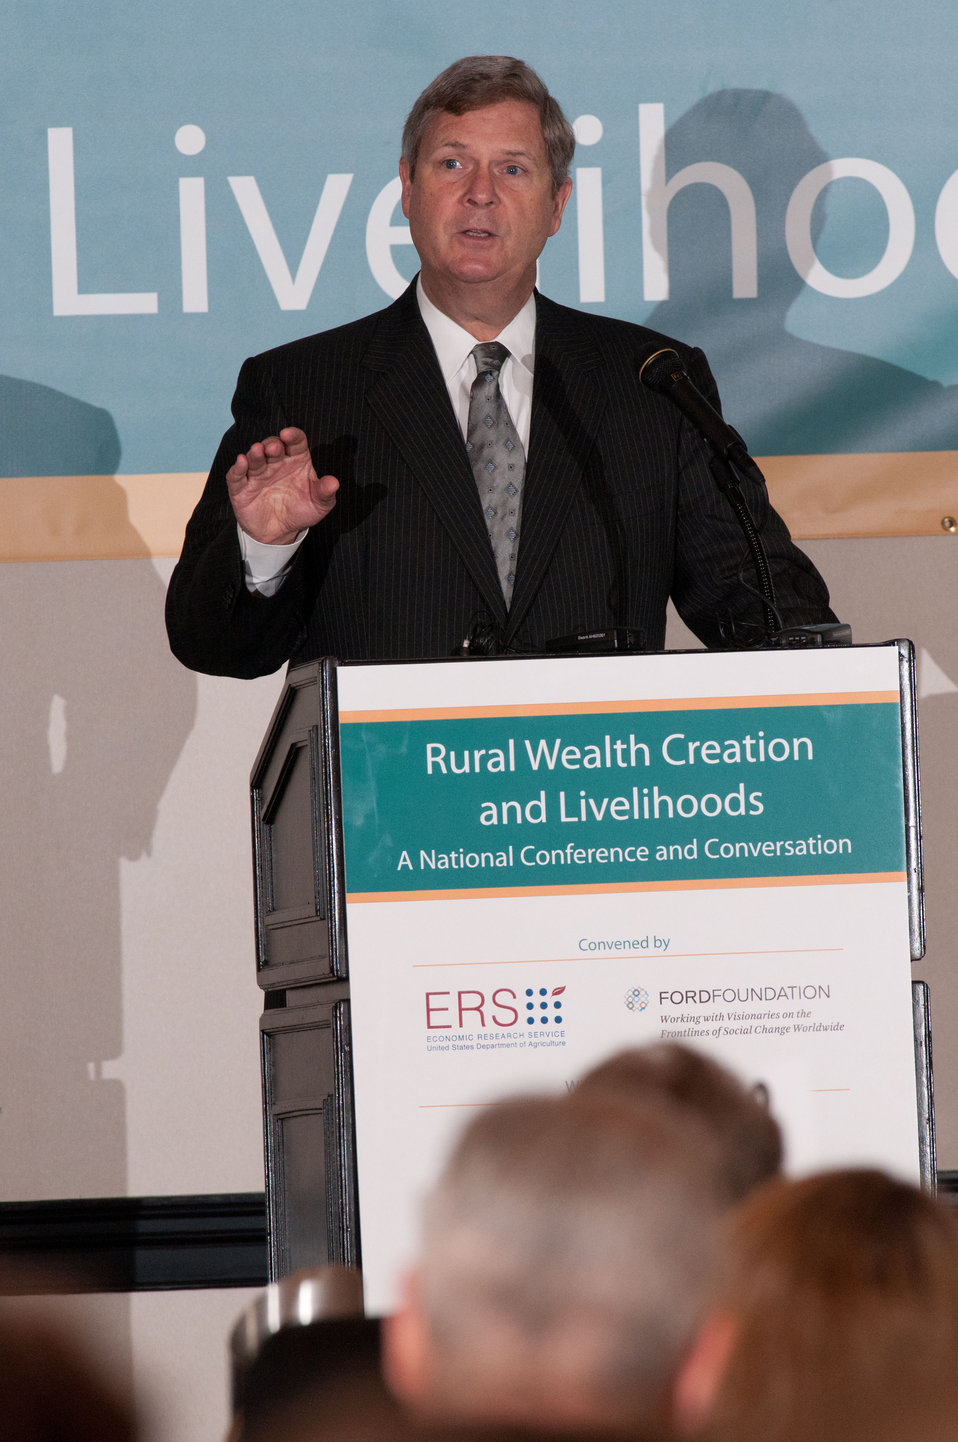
U.S. Department of Agriculture (USDA) Secretary Tom Vilsack was the keynote speaker for the Rural Wealth Creation and Livelihoods national conference for practitioners, researchers and policymakers, held at the Dupont Hotel, Washington DC, on Monday October 3, 2011. USDA partnered with the Ford Foundation to sponsor the conference.